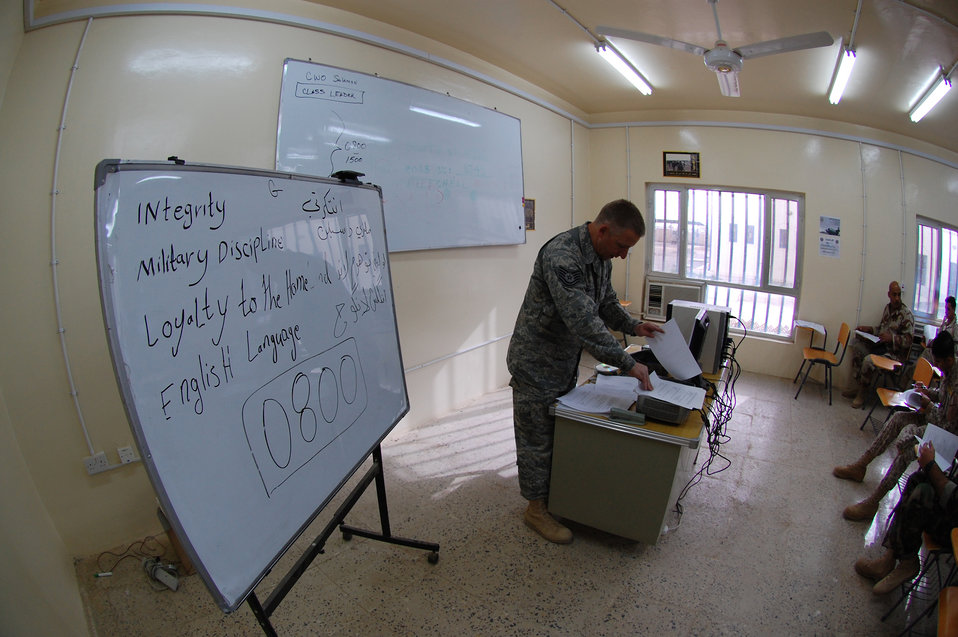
Air Force instructors empower Iraqi warrant officers to lead

Tech. Sgt. Rick Dunaway prepares to hand out the final test to his Iraqi students March 28 at Camp Taji, Iraq. Twenty-nine Iraqi warrant officers completed the seven-day course where they were taught lessons on discipline, leader influence, teamwork and development, ethics and values, Law of Armed Conflict and problem solving. Sergeant Dunaway is an 821st Expeditionary Training Squadron Iraqi warrant officer professional development course instructor. He is deployed from Maxwell-Gunter Air Force Base, Ala., and is a native of Russellville, Ark.